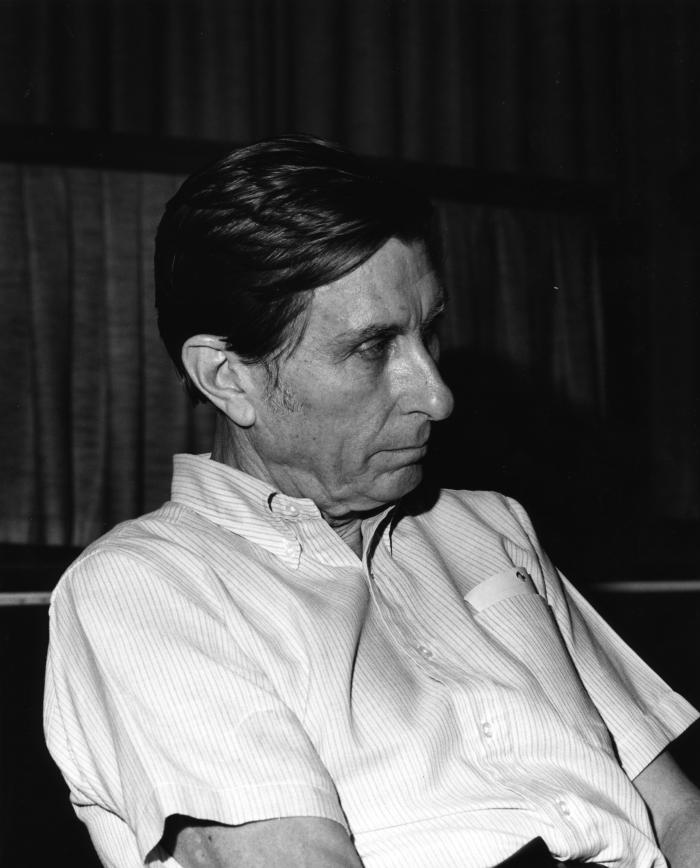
This photograph showed Centers for Disease Control official, Charles C. Shepard, M.D., who was internationally recognized for his work in leprosy, and Legionnaires' disease research.